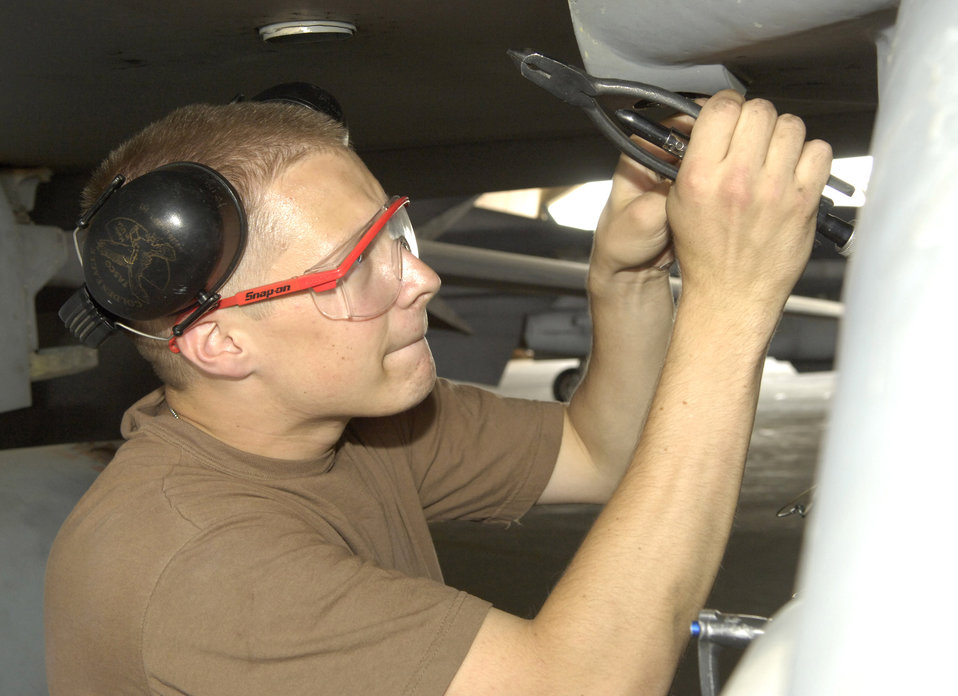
Falcon gets downloaded

Tech. Sgt. James Trixler, a weapons mechanic for the 332nd Expeditionary Aircraft Maintenance Squadron at Balad Air Base, Iraq, tightens a safety wire on the wing pylon of an F-16 Fighting Falcon. This maintenance helps ensure the bolts holding the pylon to the wing don't loosen during flight.